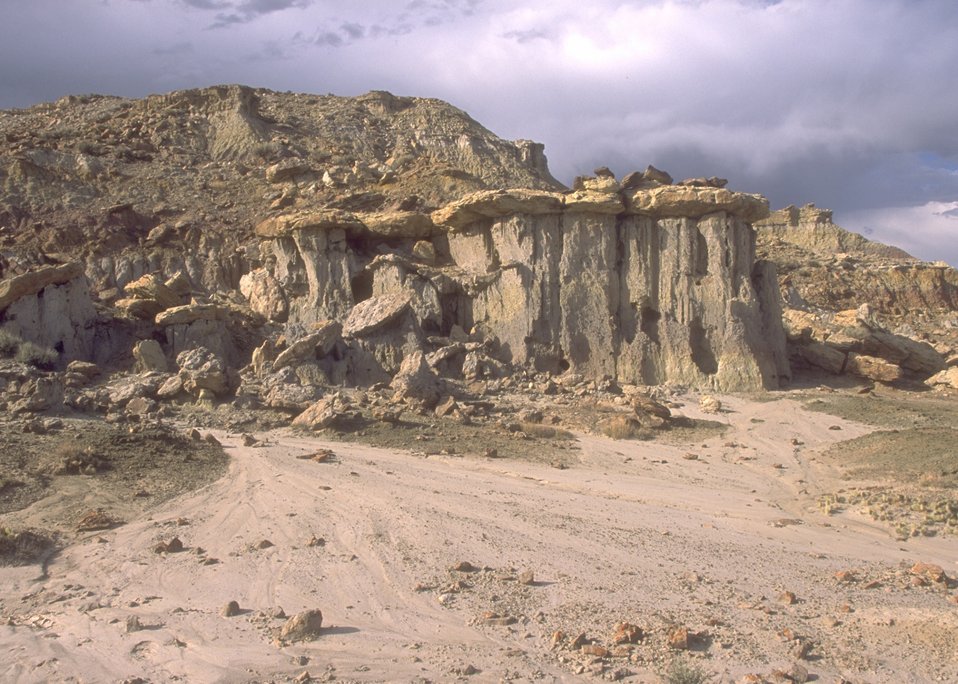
Gooseberry Interpretive Area, Worland Field Office.